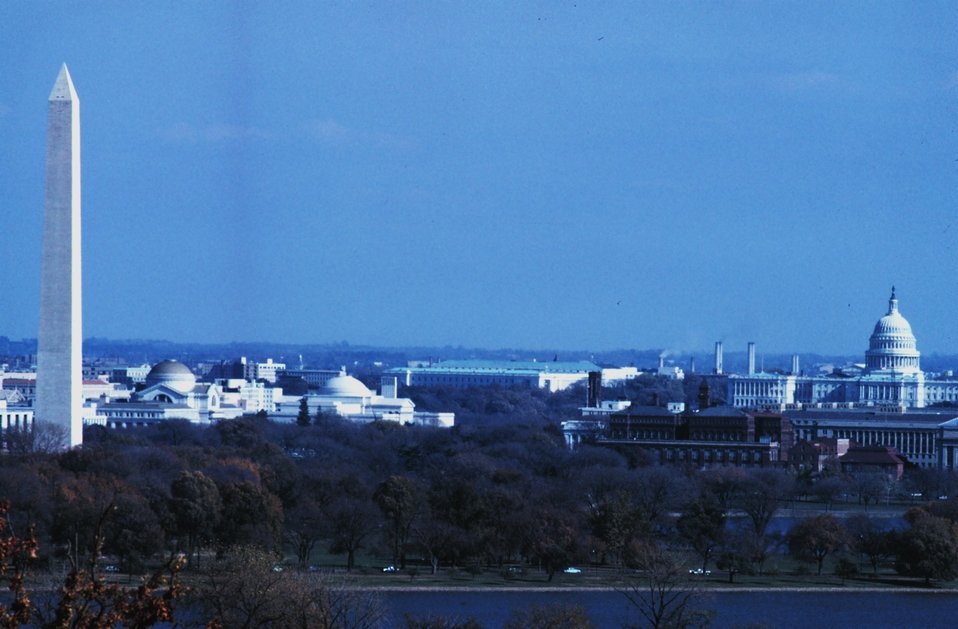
A rare photo showing both the Washington Monument and the U. S. Capitol from ground level.